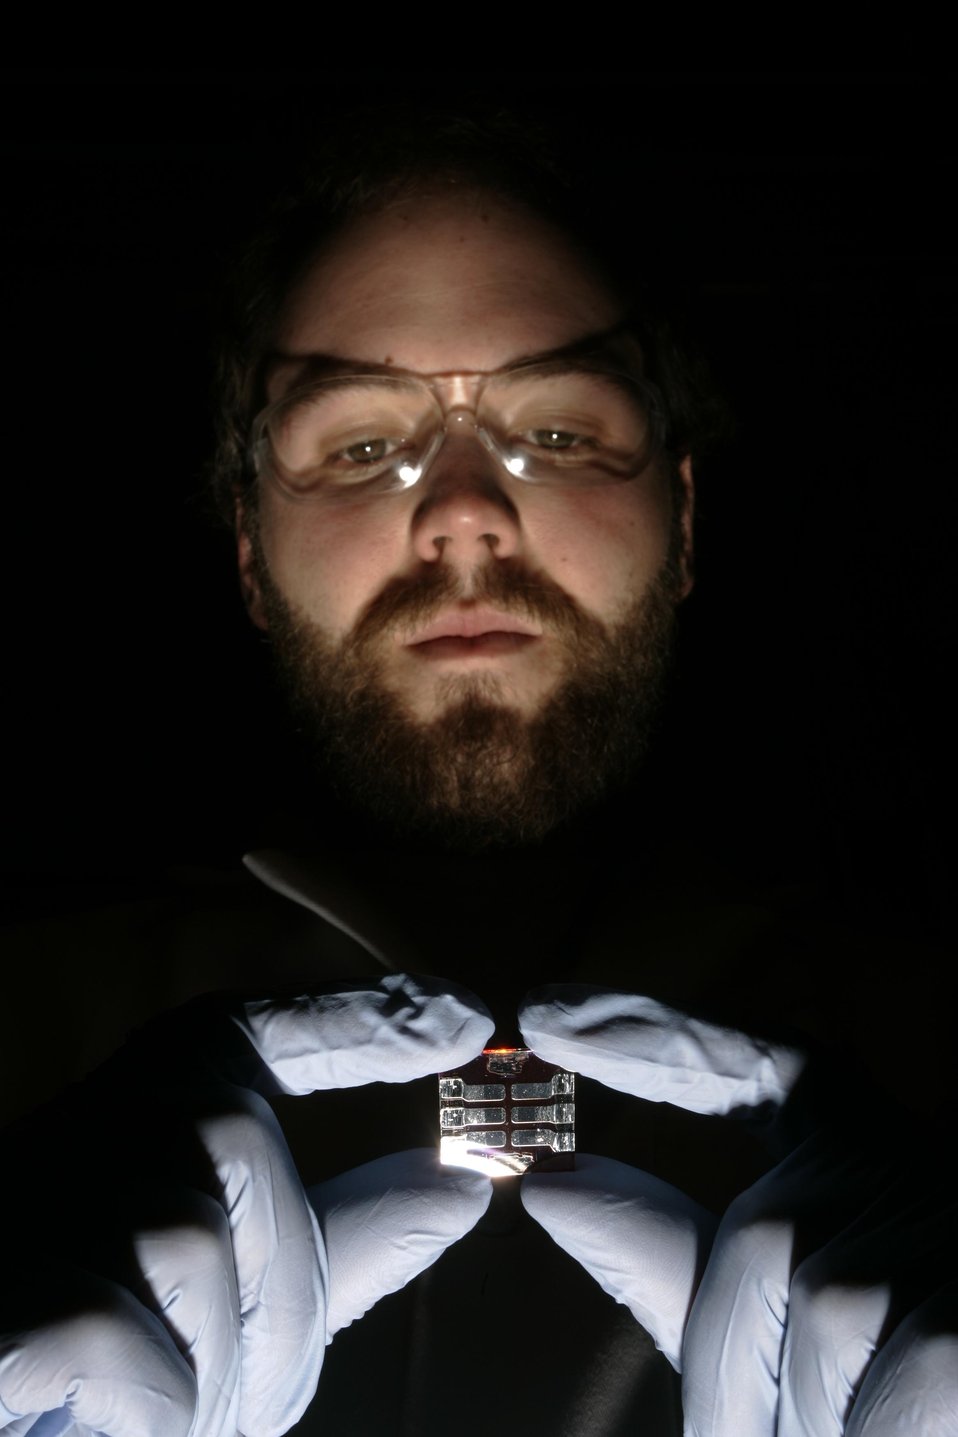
Research examining NREL's organic polymer solar cell.

NREL's polymer solar cells consist of small plastic squares of varying colors, with metal contacts for making electrical connections. In this photo, Matt White, a graduate student at the Colorado School of Mines, holds a polymer solar cell.